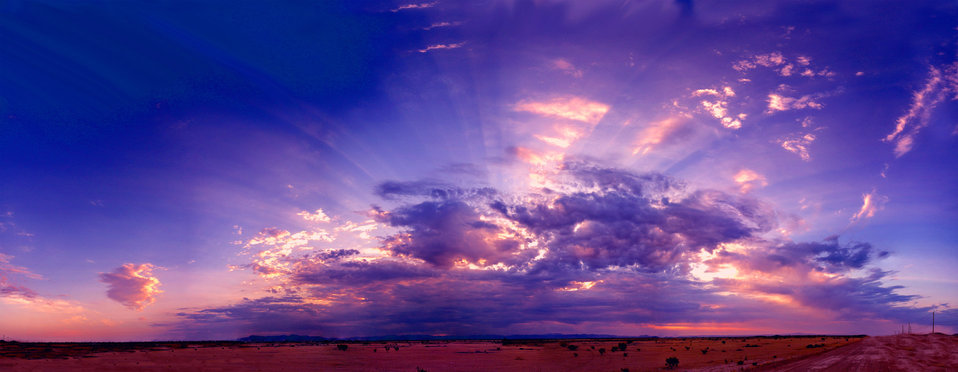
Desert sunrise 7-1-12e

Desert sunrise.